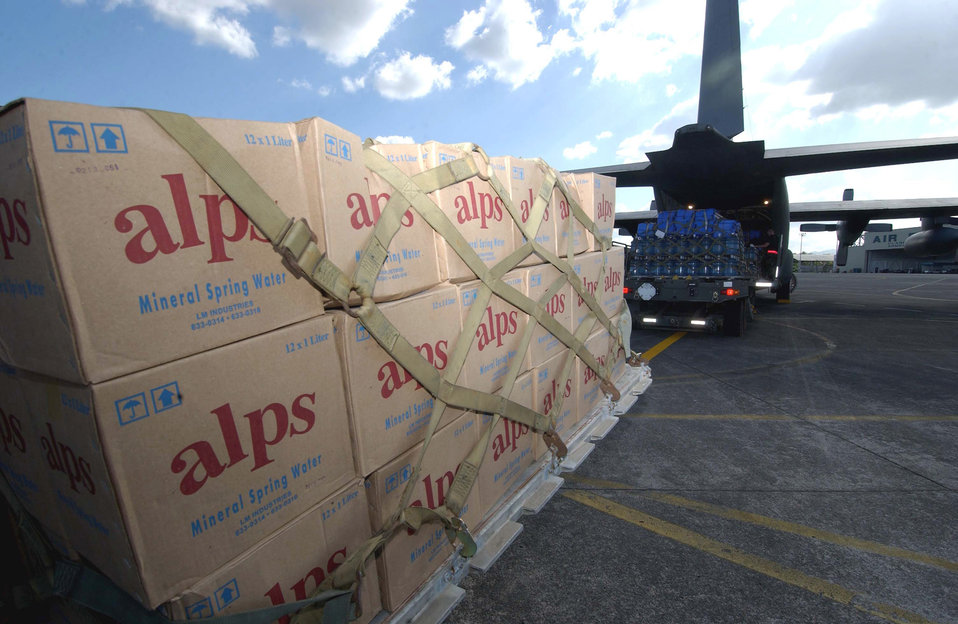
Philippine humanitarian relief

CLARK AIR BASE, Philippines (AFPN) -- A pallet of water waits to be loaded onto a C-130 Hercules Feb. 20. Water and other relief supplies are being brought to Tacloban, a city on the northwestern part of the island of Leyte, where U.S. and Philippine armed forces are working together to help victims of the Feb. 17 landslide in the village of Guinsaugon.